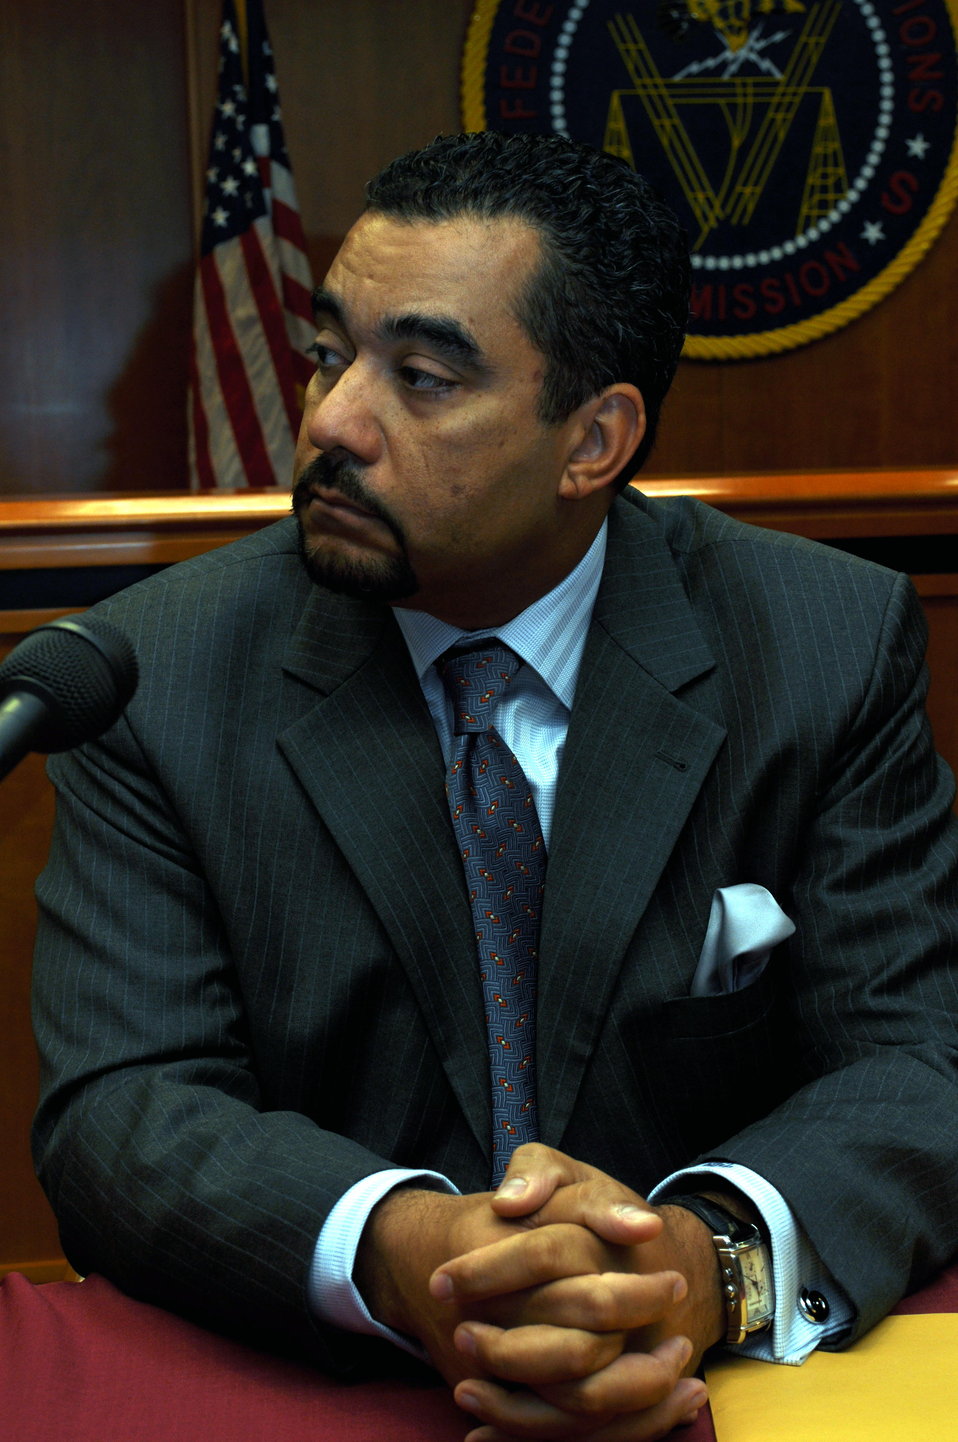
Capitalization Strategies

Workshop for small, minority and women owned businesses. Hosted by the Office of Communications Business Opportunities